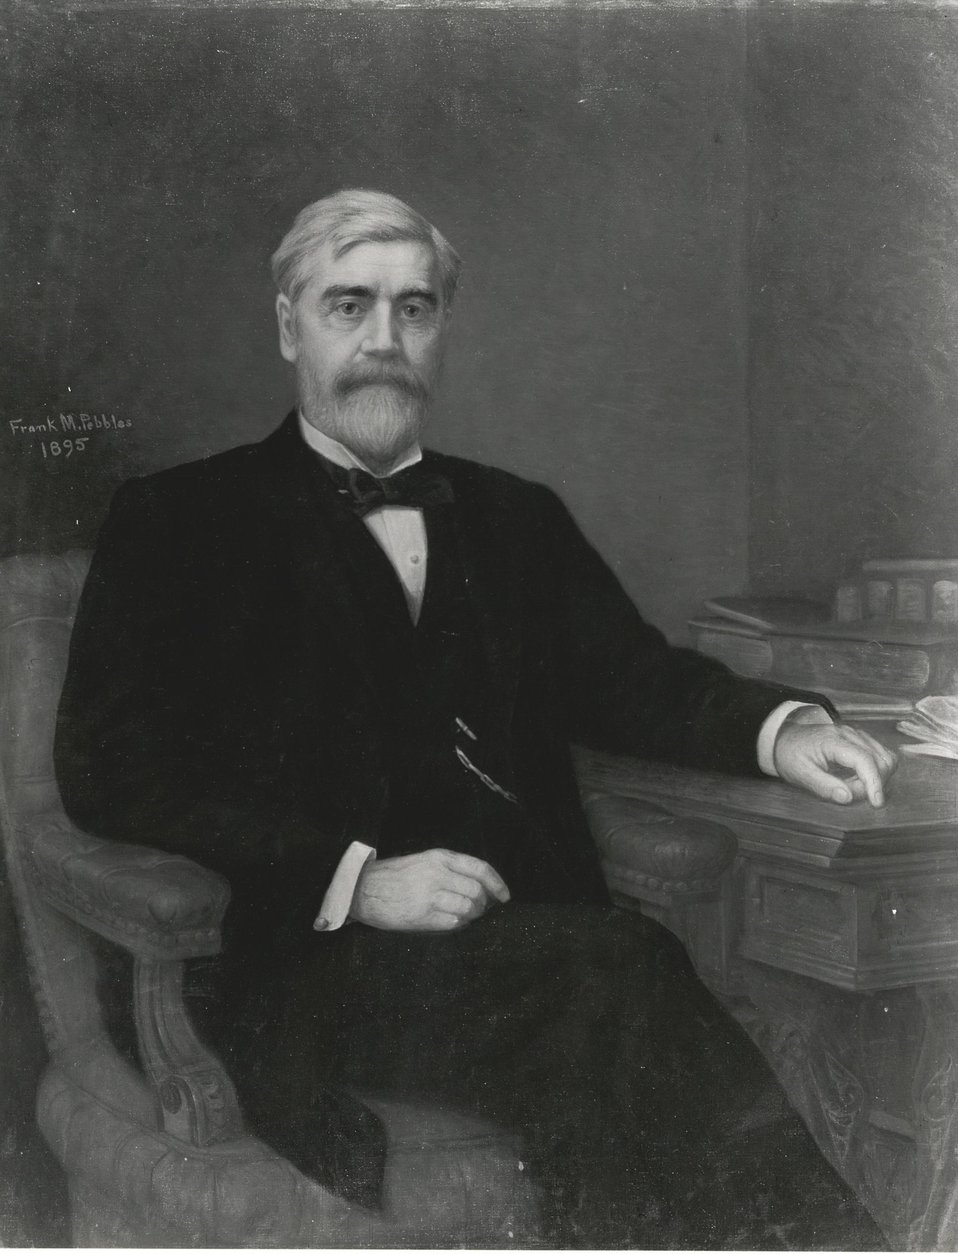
Walter Q. Greshem, U.S. Secretary of State, March 7, 1893 to May 28, 1895